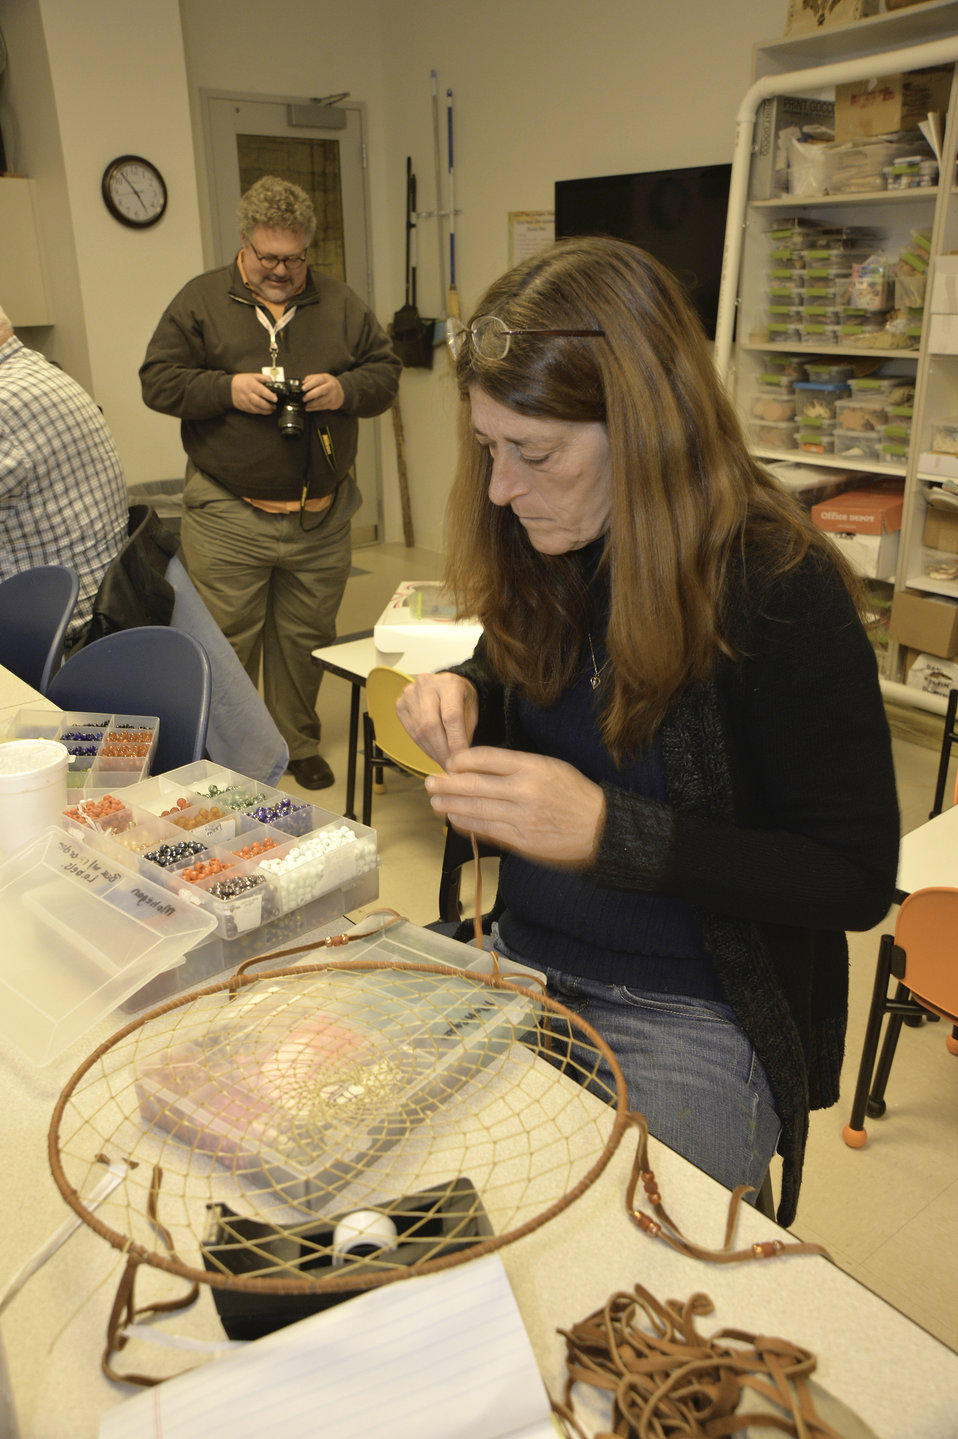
Mohegan members work on Native American crafts at the Arts and Crafts center in the Mohegan Tribe Community Center and Government Building in Uncasville, CT on Nov. 19, 2013. A U.S. Department of Agriculture (USDA) Rural Development (RD) Community Facility Loan was provided to the Mohegan Tribe for the construction of the Mohegan Tribe Community Center and Government Building in Uncasville, CT. USDA’s RD Community Facilities Programs makes and guarantees loans to develop essential community facilities in rural areas and towns of up to 20,000 in population. Loans and guarantees are available to public entities such as municipalities, counties, parishes, boroughs, and special-purpose districts, as well as to non-profit corporations and tribal governments. The 160,000 square foot building Center hosts an exhibit celebrating federal recognition, history of Mohegan Chiefs, a new Library and Archives space, new Arts and Crafts room, a new gymnasium, and a new community room to enjoy food and family. The Center will continue the Tribe’s plan for growth and meeting the needs of its members.